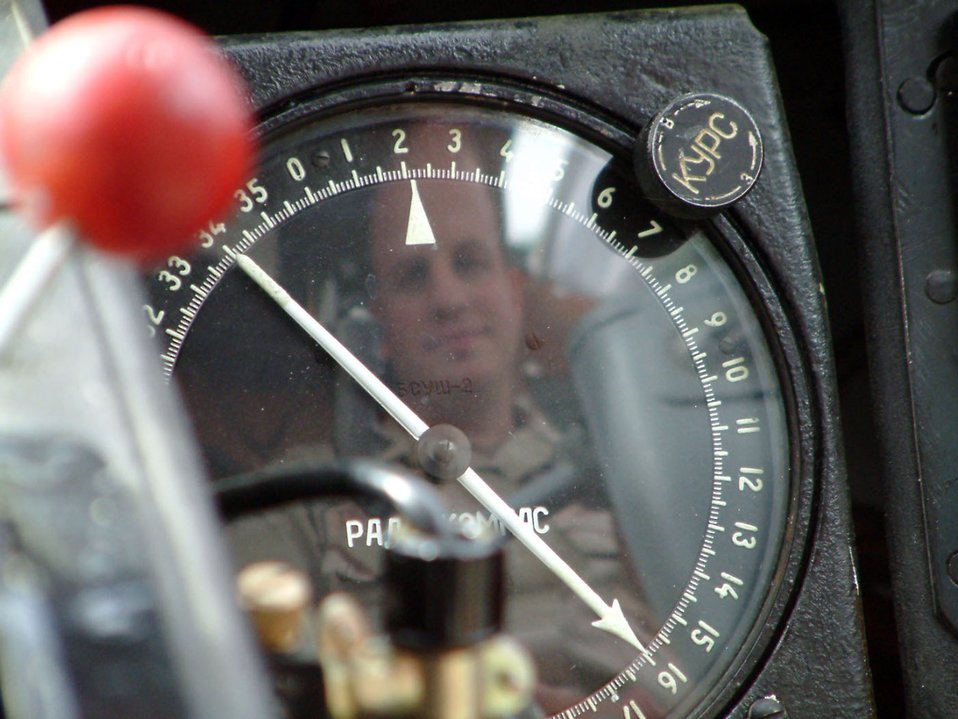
Tour marks milestone in Kyrgyzstan

Capt. James Peterson is reflected in the control panel of an AN-2 biplane during the first U. S. military tour of Kyrgyzstan's Frunze Air Base no.1. Captain Peterson is one of 16 base members invited to tour the Kyrgyz installation helping to promote better relations and enhance cooperation between U.S. Airmen and their Kyrgyz counterparts. Captain Peterson is a linguist with the 376th Air Expeditionary Wing.